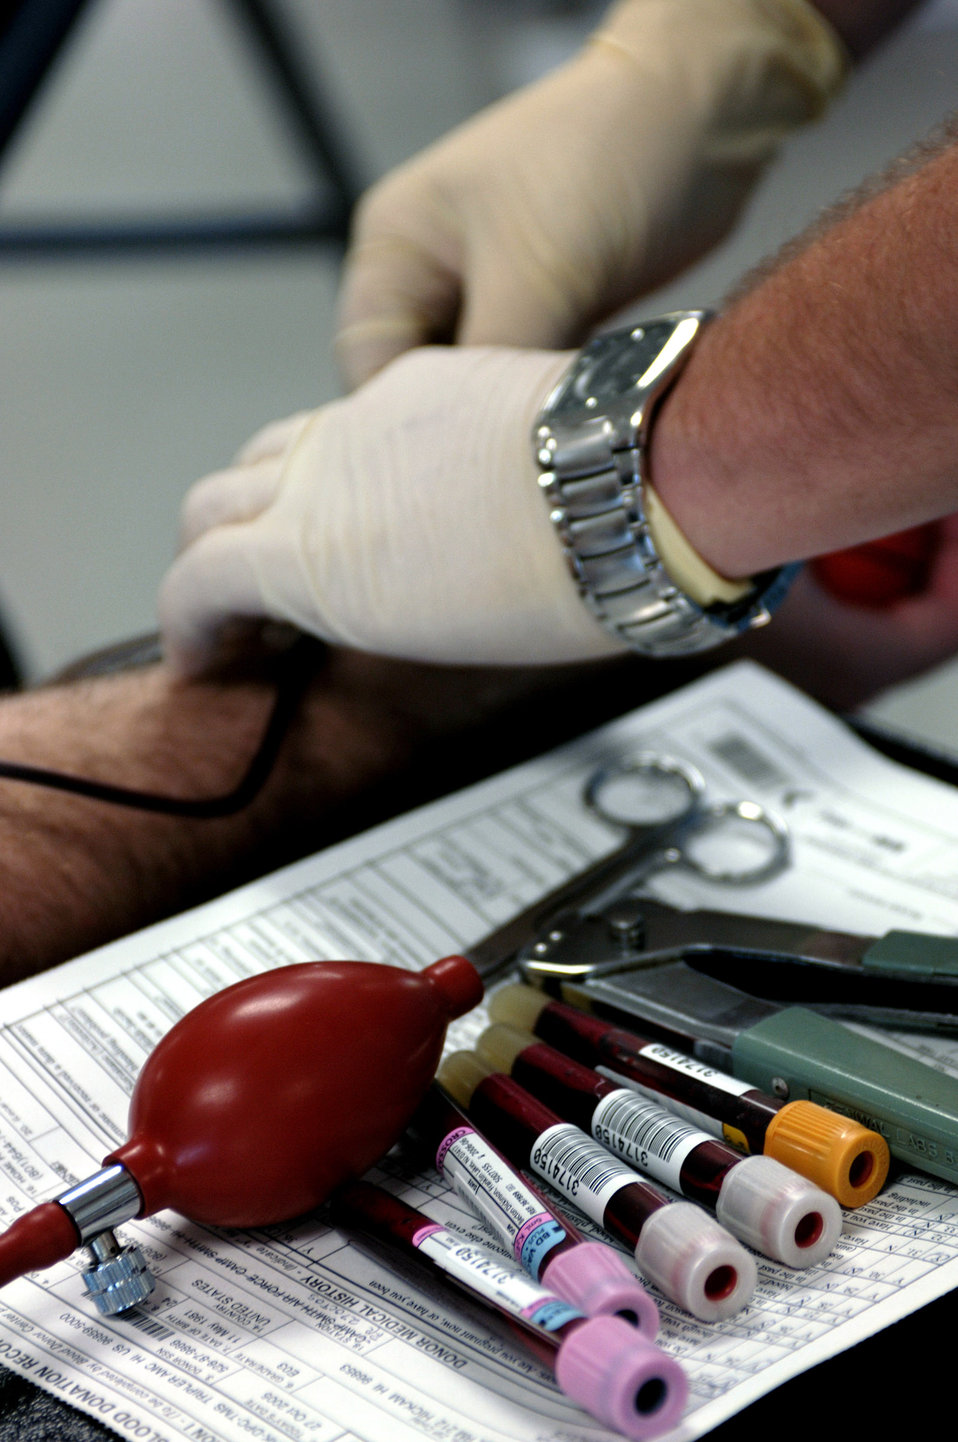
Donating time, blood

HICKAM AIR FORCE BASE, Hawaii (AFPN) -- Blood samples are taken to analyze during a blood drive here. The base conducted a base-wide blood drive at the Hickam Community Activity Center Oct. 27.